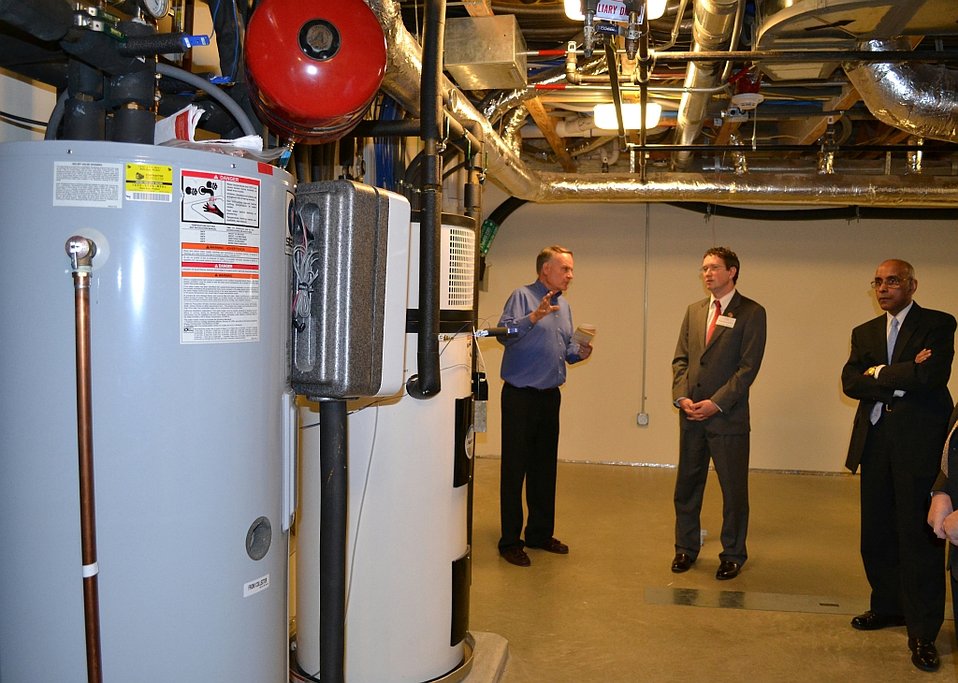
Representative Massie Tour #2

Dr. Hunter Fanney [left] & Dr. S. Shyam Sunder [right] of NIST’s Engineering Laboratory explain the measurement of heating and cooling systems in the basement of the Net-Zero Energy Residential Test Facility to U.S. Representative Thomas Massie (R. KY) [center].